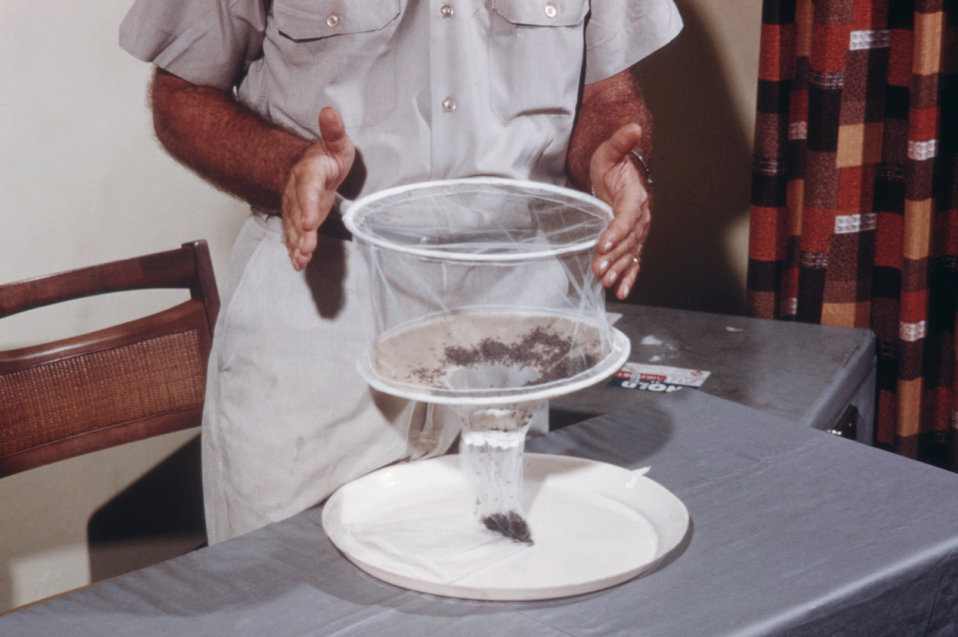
Once the collected mosquitoes have been thawed after being kept on dry ice, they are emptied from the mosquito collection bag.